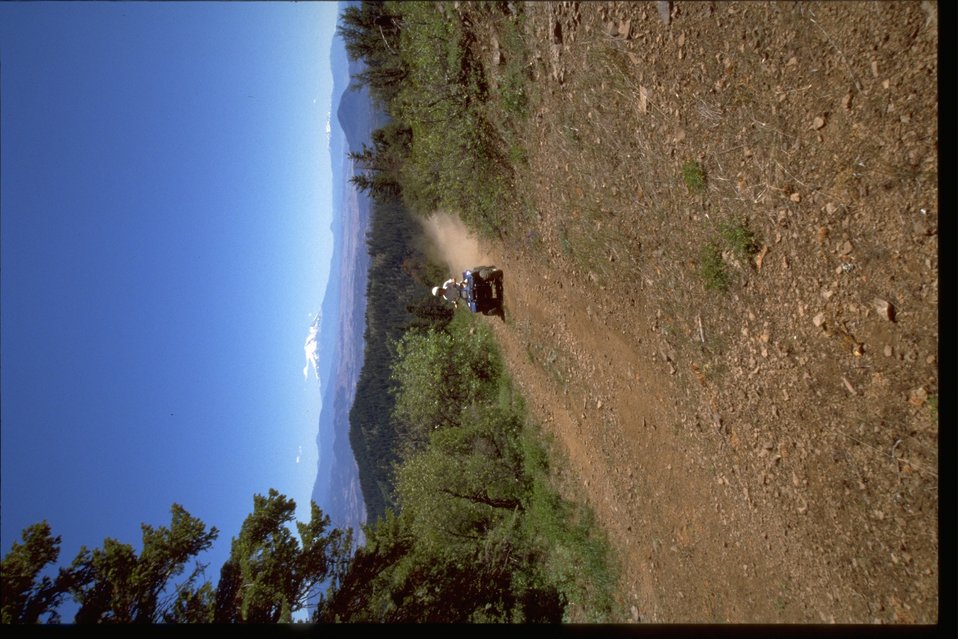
ATV rider on an off road vehicle.